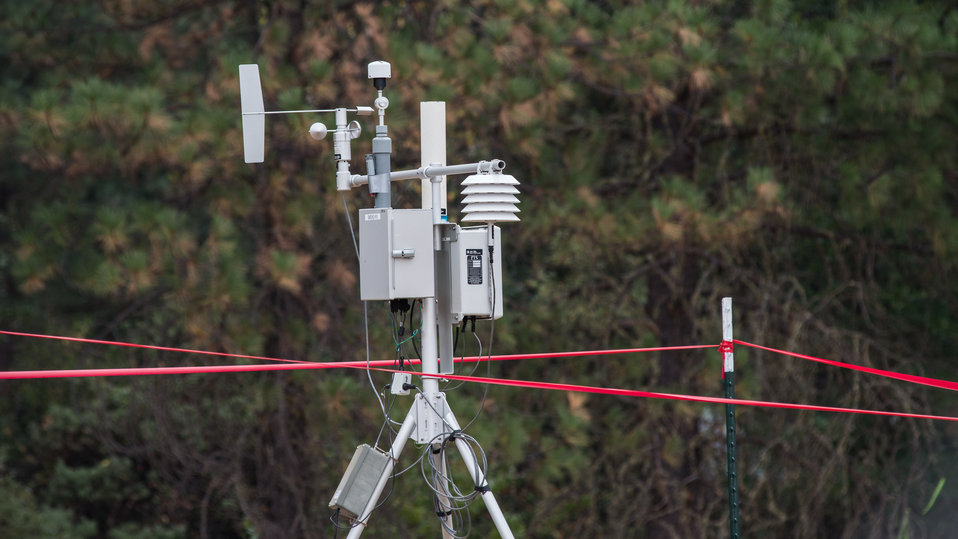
Weather station equipment at the Big Windy Complex Wildlands Fire, Incident Command Post (ICP) in Merlin, OR on Friday, Aug 9, 2013. The fire center is approximately 15 miles west of Interstate-5 and East Northeast of Galice, Oregon.